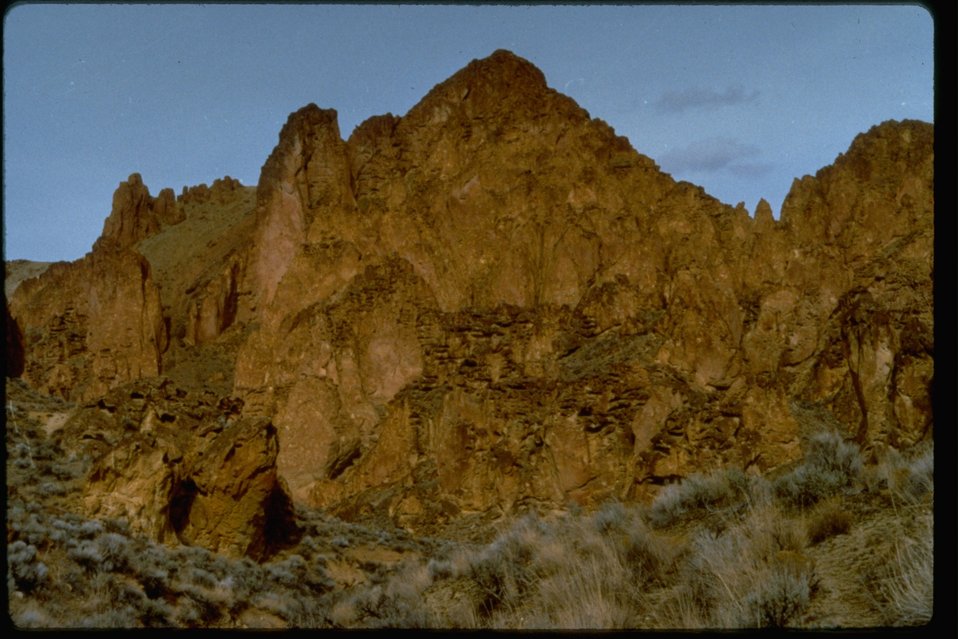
Large rock formations in the Slocum Creek Wilderness Study Area. WSA OR 3-75.